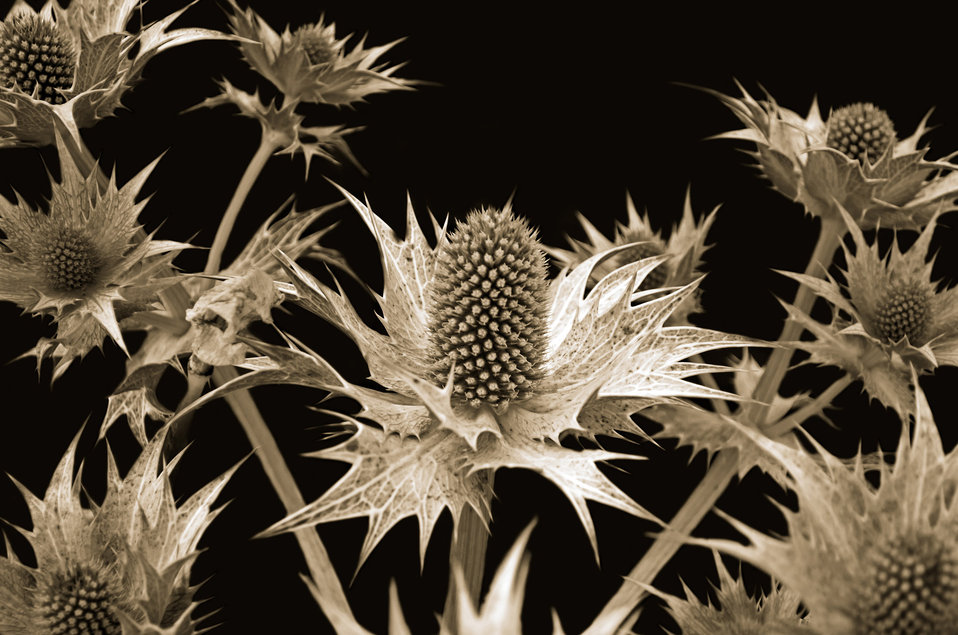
Alien plant.